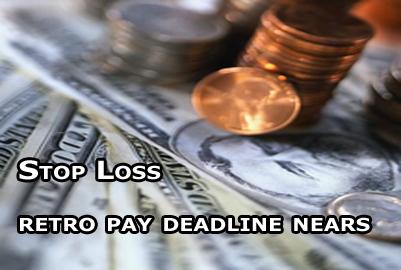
Stop Loss